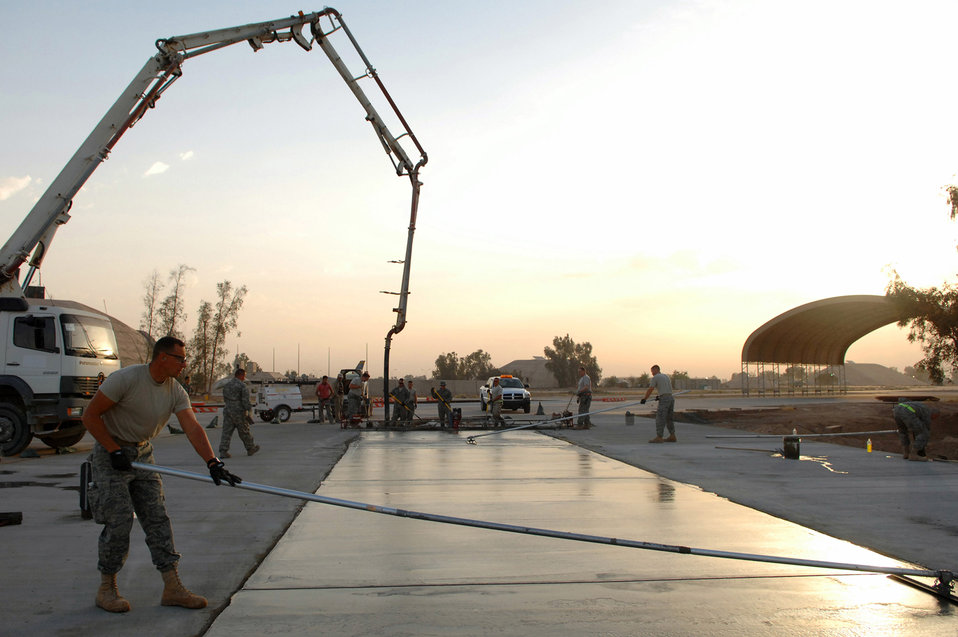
'Dirt Boyz' pave way for aircraft, Airmen

Tech. Sgt. Adam Brothers smoothes out a freshly poured concrete pad May 13 at Balad Air Base, Iraq. The pad is part of a massive extension project that will allow for more parking spots for various types of aircraft. Sergeant Brothers is a 332nd Expeditionary Civil Engineer Squadron heavy equipment operator deployed from Patrick Air Force Base, Fla.